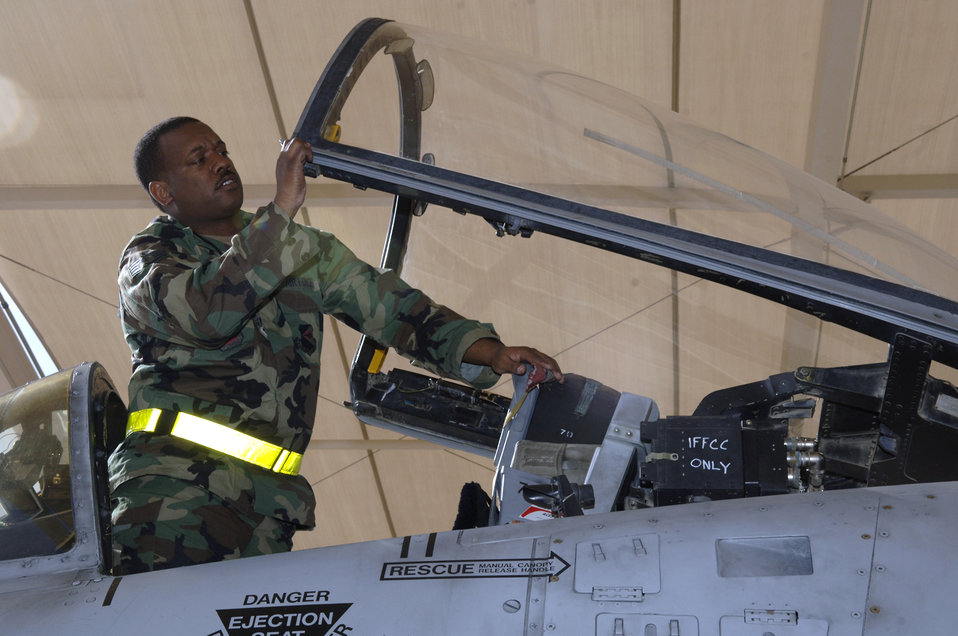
We're ready!

Staff Sgt. Michael Sangfield performs a maintenance inspection on an A-10 Thunderbolt II Feb. 17 during an operational readiness exercise at Davis-Monthan Air Force Base, Ariz., being conducted by the Air Combat Command inspection team. The ACC inspectors test the ability of 355th Wing Airmen to prepare to deploy and fight when called. Sergeant Sangfield is an egress journeyman assigned to the 355th Maintenance Group.